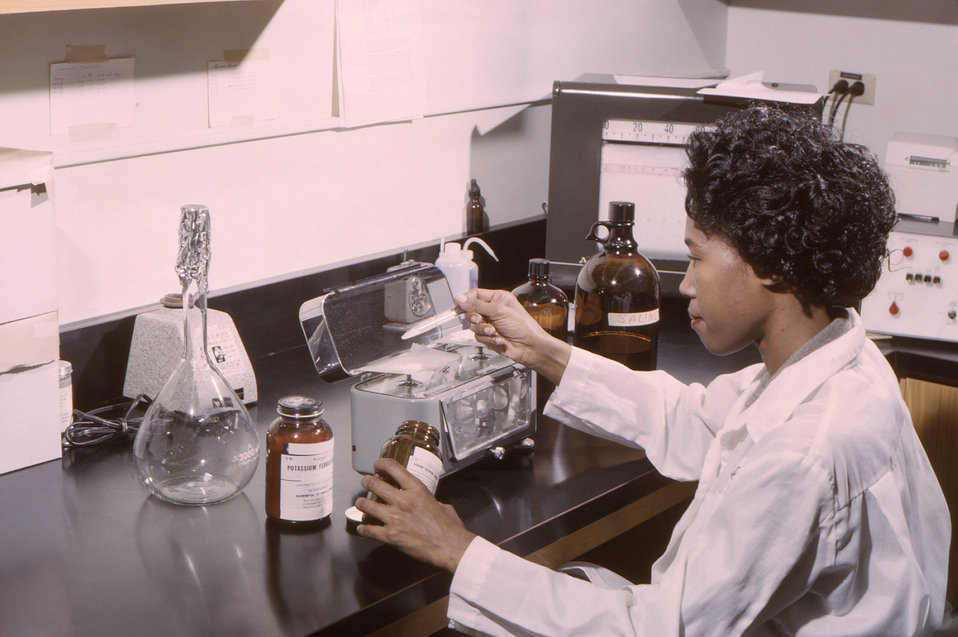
This historic 1965 photograph depicted a laboratory technician as she was measuring out various powdered chemicals, which would subsequently be combined in order to formulate reagents to be used in conjunction with an AutoAnalyzer�.